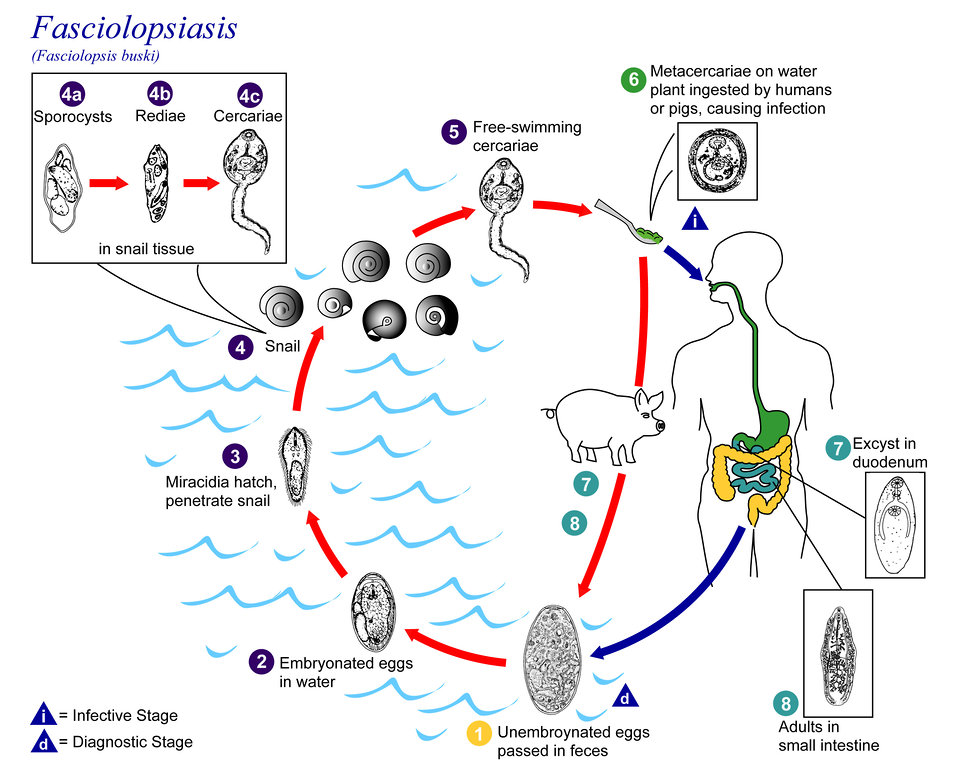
This is an illustration of the life cycle of Fasciolopsis buski, the causal agent of Fasciolopsiasis.